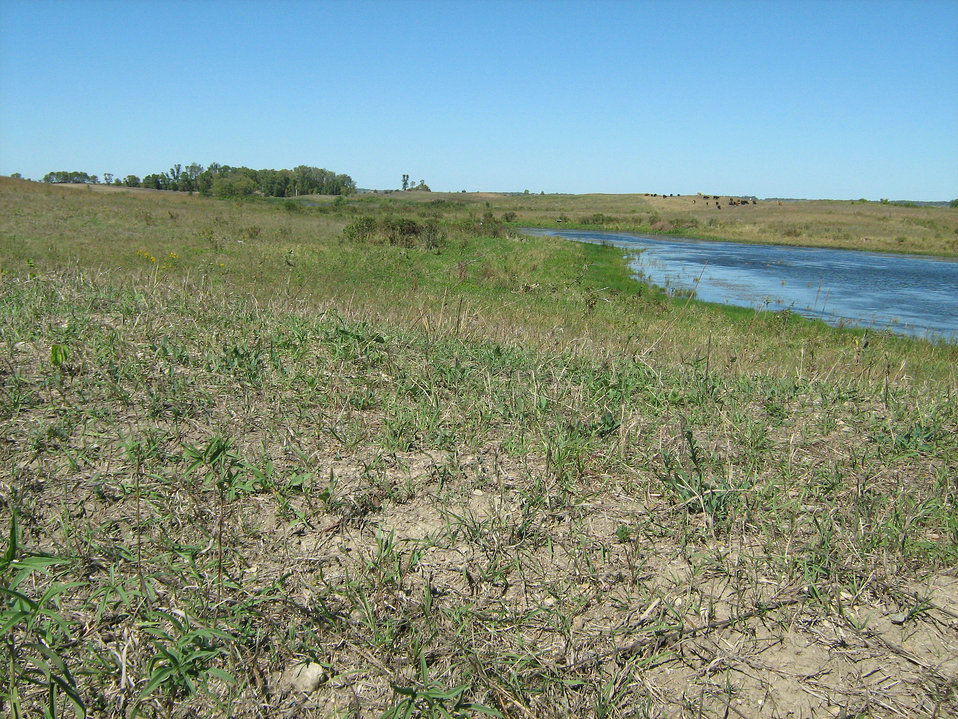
Grazed August 2012

Note the intensity that we are grazing, as well as the cross fence line in the background. The cows have only been off the paddock on the left for two weeks, and already it is greening up. The impact in the foreground is from 1 AUM per acre per month. It has been extremely dry, but already the site is greening up nicely. Note the excellent litter removal!